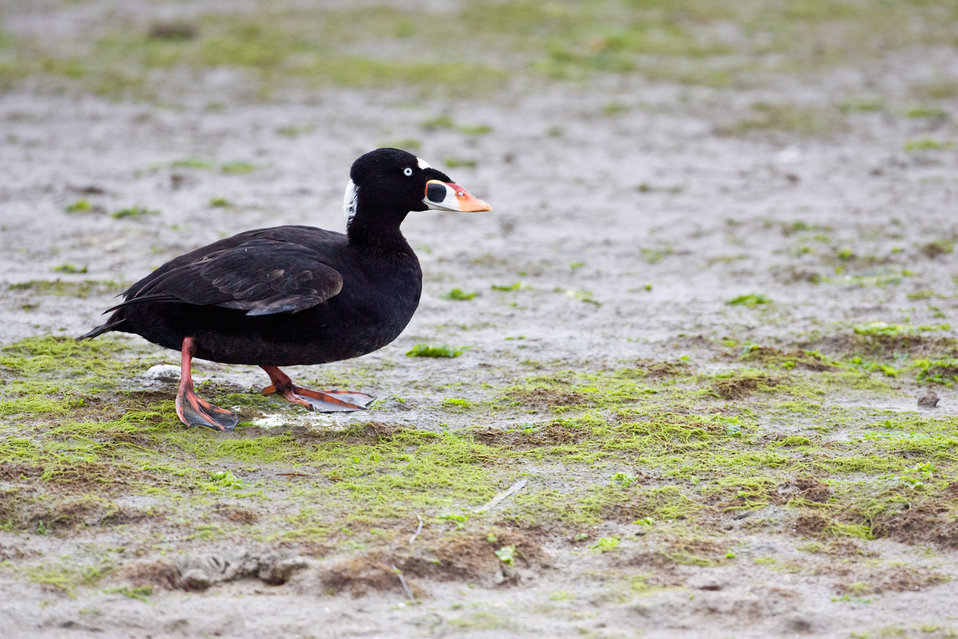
Surf scoter (adult male)

This male scoter (Melanitta perspicillata) wobbles along the mudflats. It's bill is a distinctive, heavy triangular bill, forming a sort of wedge-shaped head. The surf scoter's call is generally a low whistle or gurgle for males, and a croaking sound for females